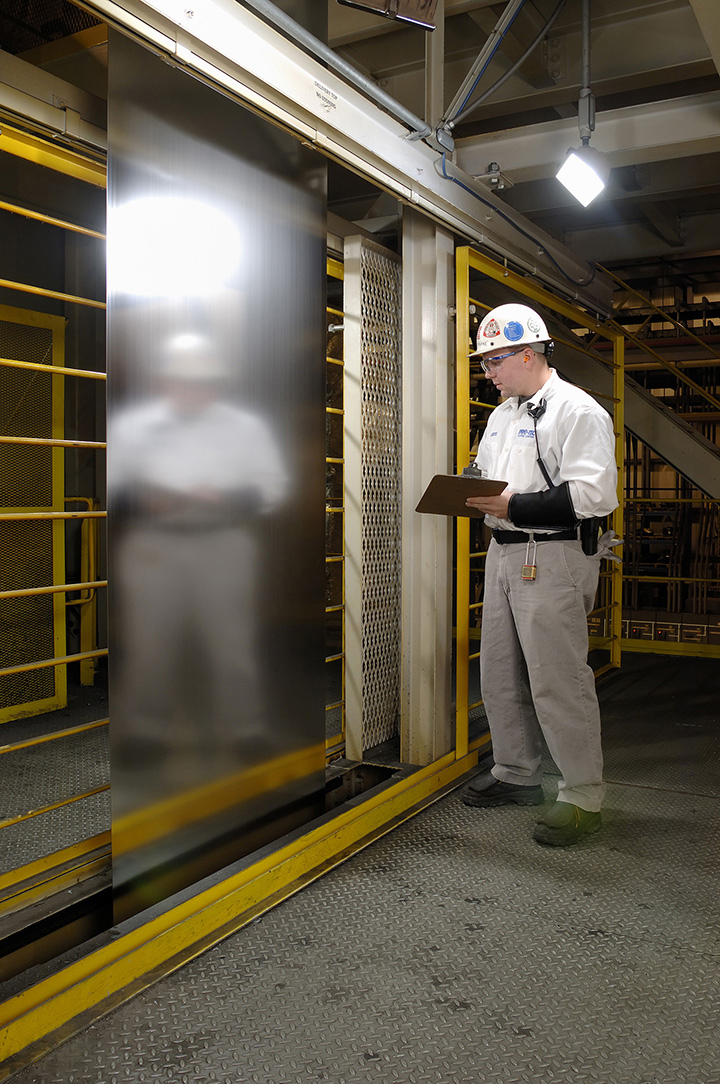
2007 Baldrige Award, PRO-TEC Coating Co.

2007 Malcolm Baldrige National Quality Award, Small Business, Recipient Profile